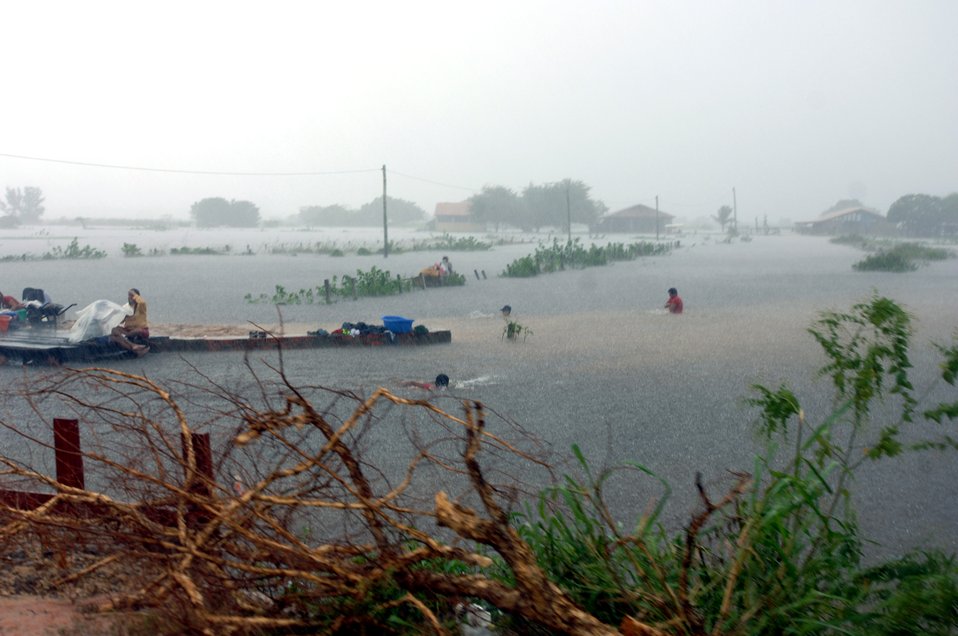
Flooded Bolivia gets humanitarian relief

Communities in Trinidad, Bolivia, are flooded by El Nino rains that hit March 5. U.S. Southern Command, in cooperation with the U.S. Agency for International Development, is delivering humanitarian supplies in response to devastating floods in Eastern Bolivia.